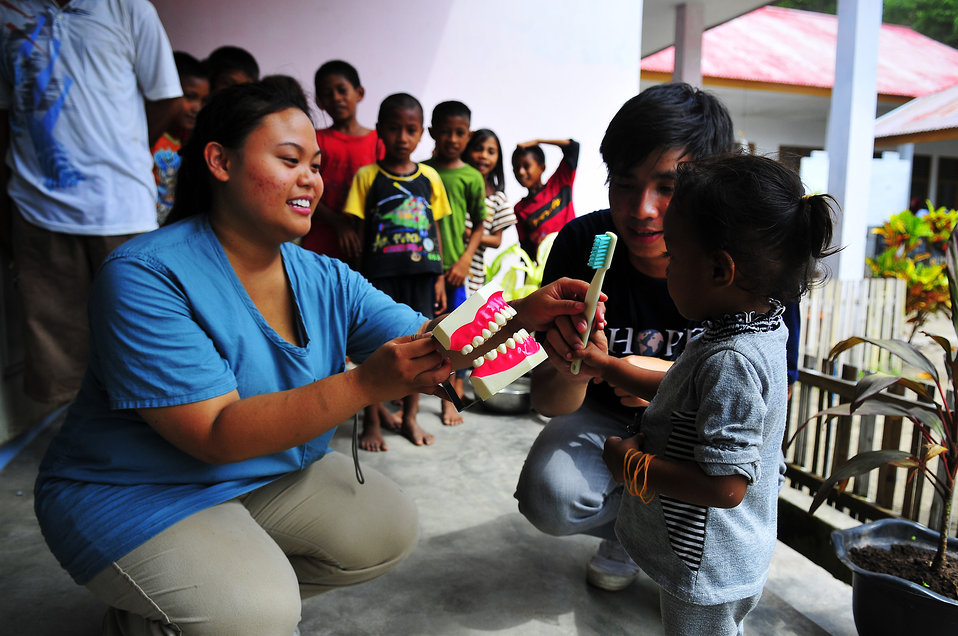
Maureen Malingkas Demonstrates the Proper Way To Brush Your Teeth

Maureen Malingkas, a dental assistant volunteer with the University of California San Diego Pre-Dental Society which is currently embarked with the Military Sealift Command hospital ship USNS Mercy (T-AH 19), demonstrates the proper way to brush your teeth to a local Indonesian child during a medical civic action program organized by the Military Sealift Command hospital ship USNS Mercy (T-AH 19) on July 21, 2010, in Ternate, Indonesia. Mercy is deployed for Pacific Partnership 2010, the fifth in a series of annual U.S. Pacific Fleet endeavors conducted in Indonesia as a disaster relief exercise aimed at strengthening regional partnerships.